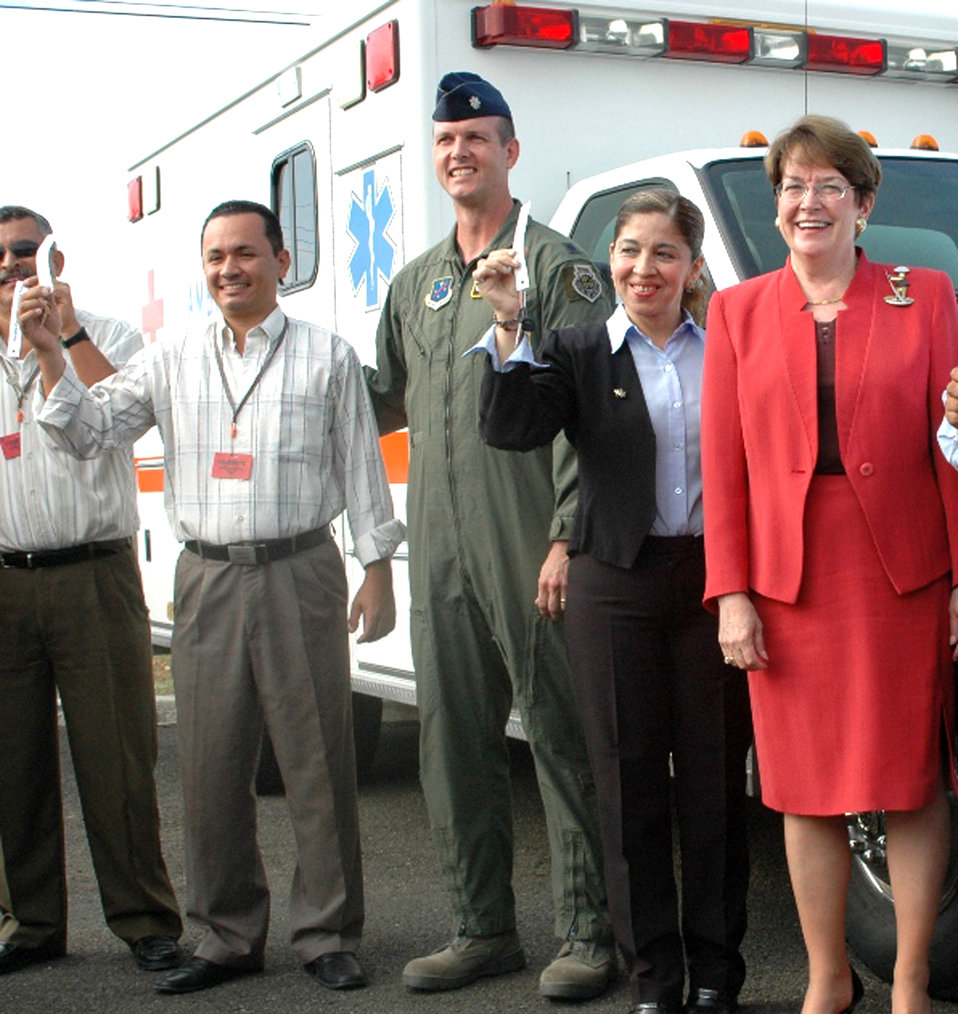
Forward Operating Location Manta closes, officials donate items to local community

Lt. Col. Jared Curtis (center) stands with local citizens in front of an ambulance donated to an organization Sept. 16, 2009, near Forward Operating Location Manta, Ecuador. To mark the end of 10 years of community relations activities, American military officials donated almost $1 million worth of equipment, food and supplies to local establishments. The forward operating location was deactivated Sept. 18 after a lease between the United States and Ecuador expired. Colonel Curtis is the 478th Expeditionary Operations Squadron commander.